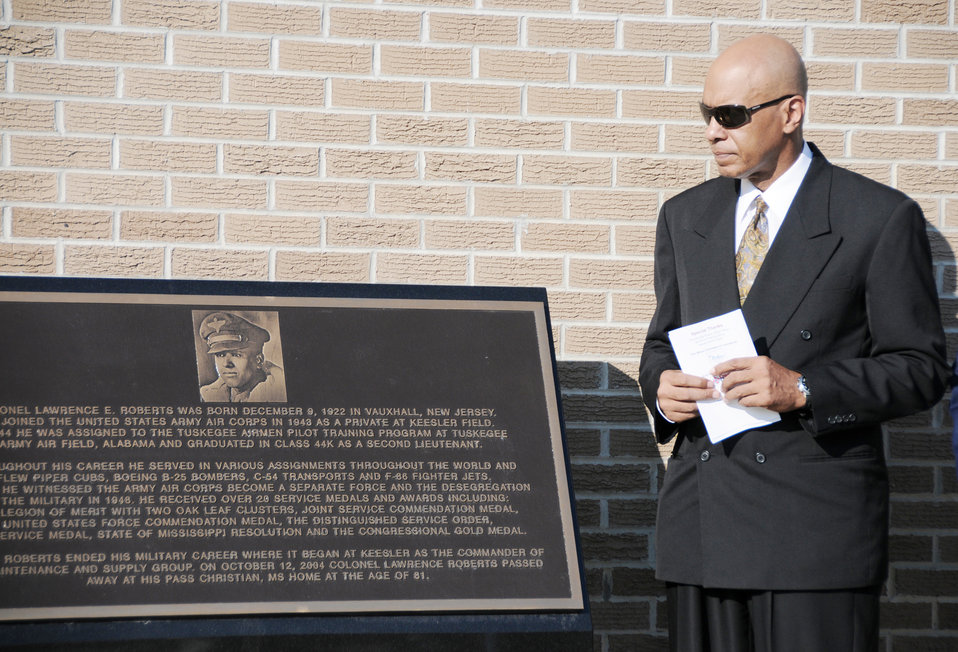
Aircraft maintenance facility dedicated to Tuskegee Airman

Airmen from Keesler Air Force Base, Miss., performed a dedication ceremony of the Consolidated Aircraft Maintenance Facility named after Col. (Ret.) Lawrence Roberts who served as a Tuskegee Airman and adopted Biloxi, Miss., as his home. The $22.6 million facility will be used to maintain the C-130J six-bladed composite propeller, and many other significant maintenance capabilities. The Roberts' family, along with more than 250 community and civic leaders, attended the ceremony.